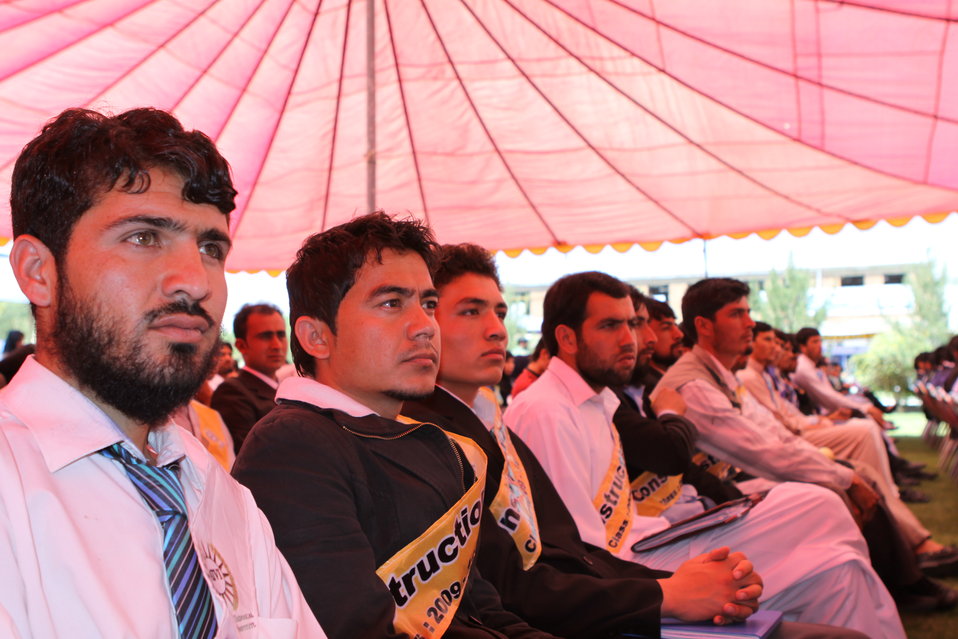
100522 ATVI Graduation 061